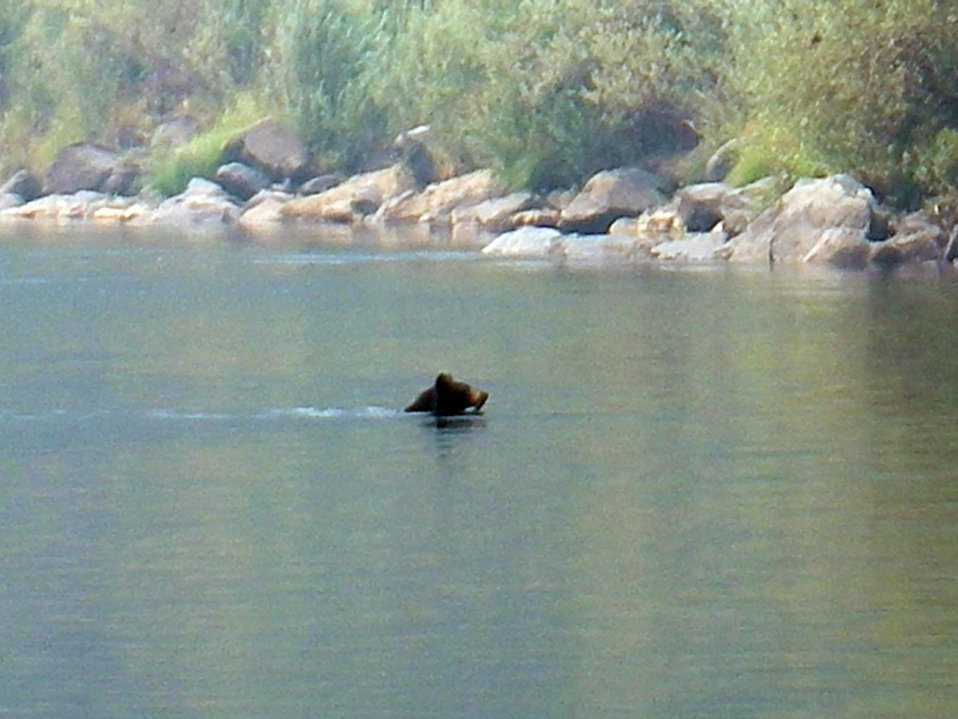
A black bear swims across the Rogue River at the Big Windy Complex Fire. The Big Windy Complex Fire consists of three fires: The Big Windy Fire, Calvert Peak Fire, and Jenny Fire (formerly the Windy 16 Fire) near Grants Pass, OR. The fires began on Jul. 26, 2013 by lighting have consumed approximately 15,358 acres and are 15% contained.